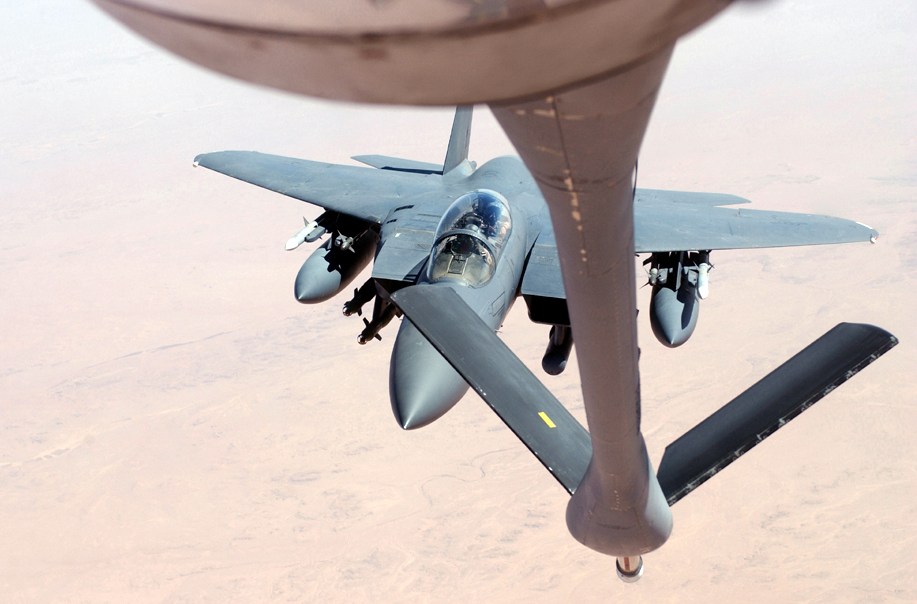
Strike Eagle refuels

OPERATION IRAQI FREEDOM -- An F-15E Strike Eagle on a combat sortie over Iraq prepares to receive fuel from a KC-135 Stratotanker. The F-15E and its crew are deployed from Seymour Johnson Air Force Base, N.C., and the KC-135 is from Pease Air National Guard Base, N.H.